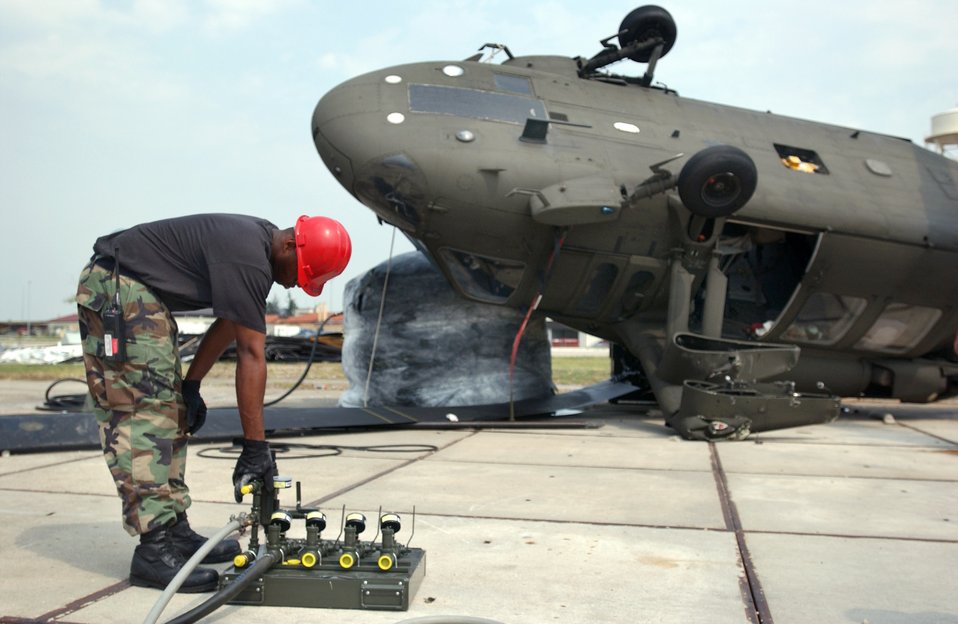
This side up

Staff Sgt. Vincent Metcalf controls the pressure on a pneumatic air bag, which will lift the nose and tail of an aircraft being stabilized at Aviano Air Base, Italy, on July 6. The aircraft suffered damage after a severe thunderstorm with wind gusts that measured up to 82 knots. The storm tore through Aviano on June 29, and caused basewide damage estimated at $3.5 million. Sergeant Metcalf is assigned to the 31st Maintenance Squadron.